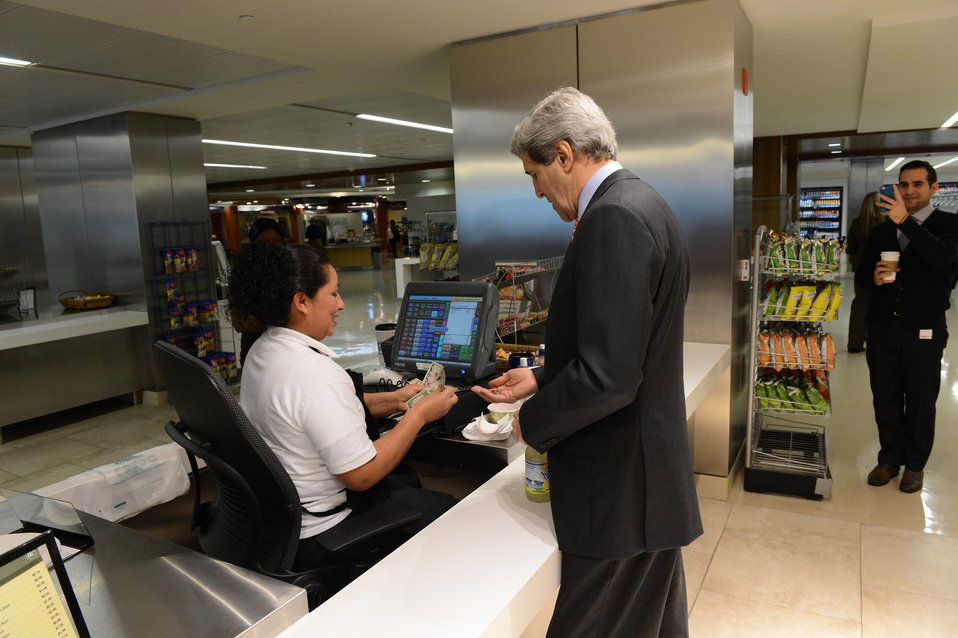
Secretary Kerry Drops by the Cafeteria

U.S. Secretary of State John Kerry drops by the cafeteria at the U.S. Department of State in Washington, D.C., February 15, 2013.